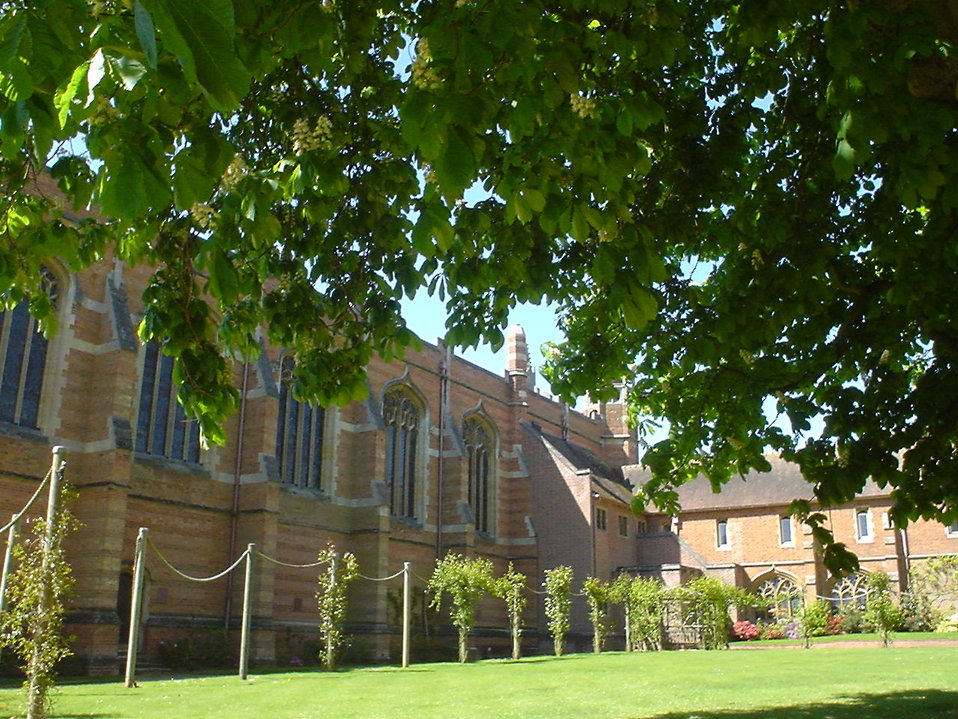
Radley College Chapel & Chapel Quad